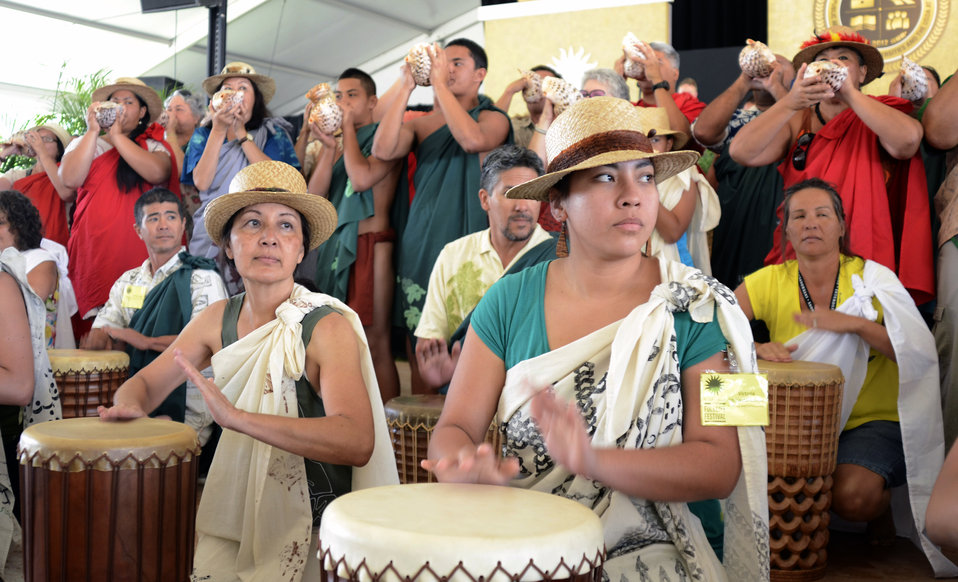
University of Hawaii's Tuahine Troupe member Kahealani Wilcox plays the drum at the opening ceremony for the 2012 Smithsonian Folklife Festival in Washington, D.C. on Wednesday, June 27, 2012. This year’s festival features three themes; “Creativity and Crisis” celebrates the 25th anniversary of the AIDS Memorial Quilt, “Citified,” explores the rich culture and community of neighborhoods east of the Anacostia, and the third “Campus and Community” celebrates 150 years of USDA and the Land-Grant university system.